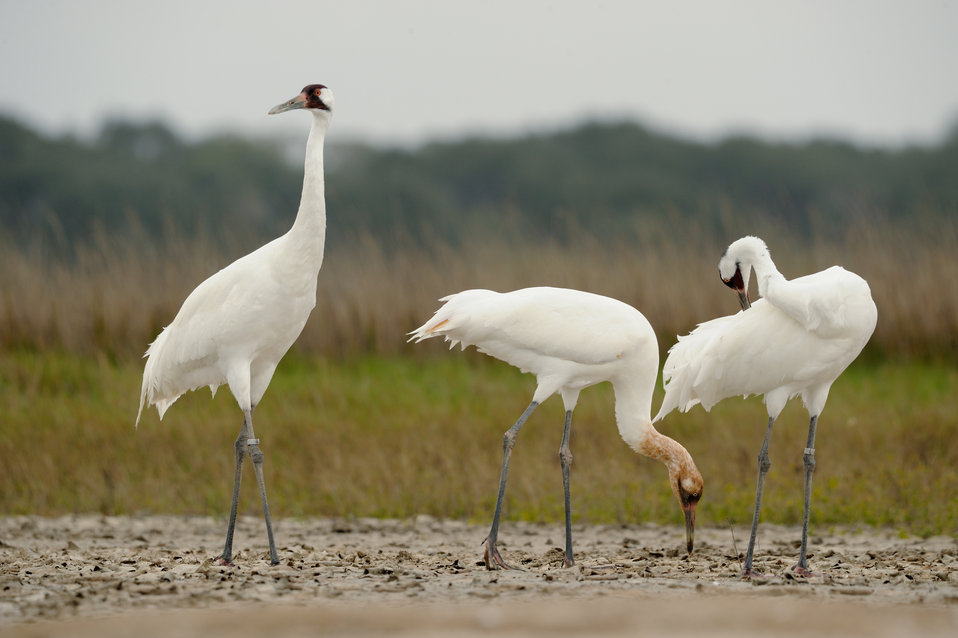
Whooping cranes at Aransas NWR

A whooping crane (Grus americana) family in their wintering grounds at Aransas National Wildlife Refuge in Texas.